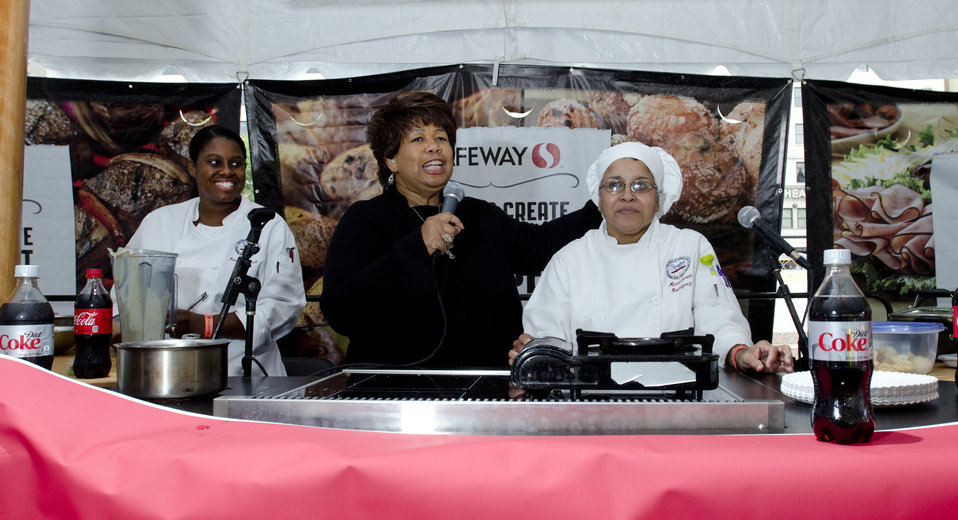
Left to right, Stratford University culinary students Danielle Shell (left) and Maricarmen Rodriguez (right) listen Shirley Harrington-Watson of the USDA Office of Communications speaking at the Taste of D.C., event that highlights more than 70 eateries, 30 specialty beer providers, the United Service Organization (USO) Metropolitan Washington, and live bands. It is anticipated that more than 500,000 people will attend over the course of the three-day event, which extends from the White House to the Capitol, along Pennsylvania Ave. in Washington D.C. on Sunday, October 7, 2012.